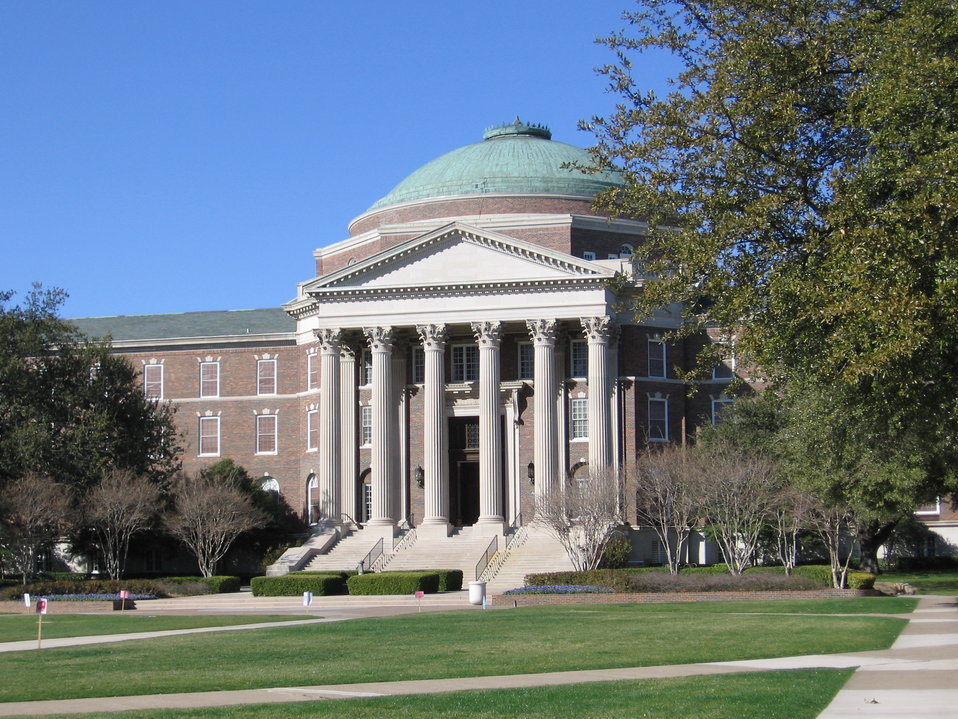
Dallas Hall1